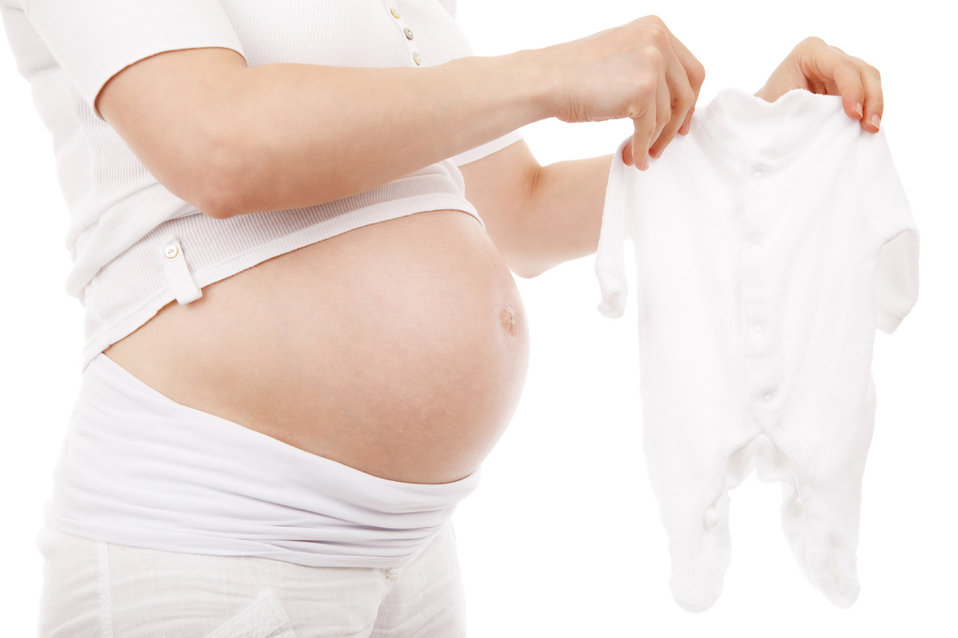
Expecting baby

Young pregnant woman showing a white infant bodysuit.